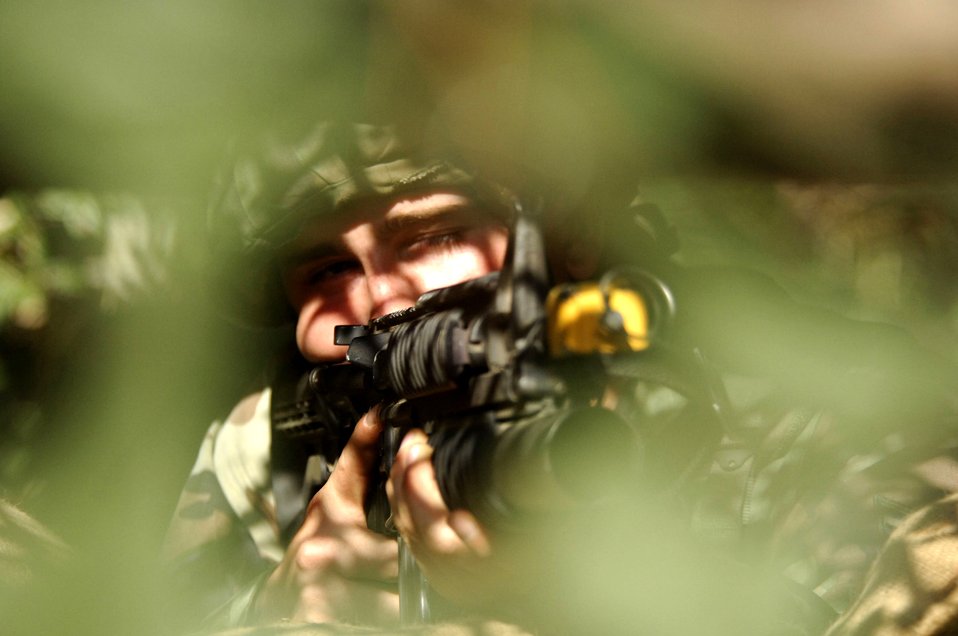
Brave defenders

EGLIN AIR FORCE BASE, Fla. (AFPN) -- Airman 1st Class Joseph Lutz provides cover fire for Airmen at a simulated